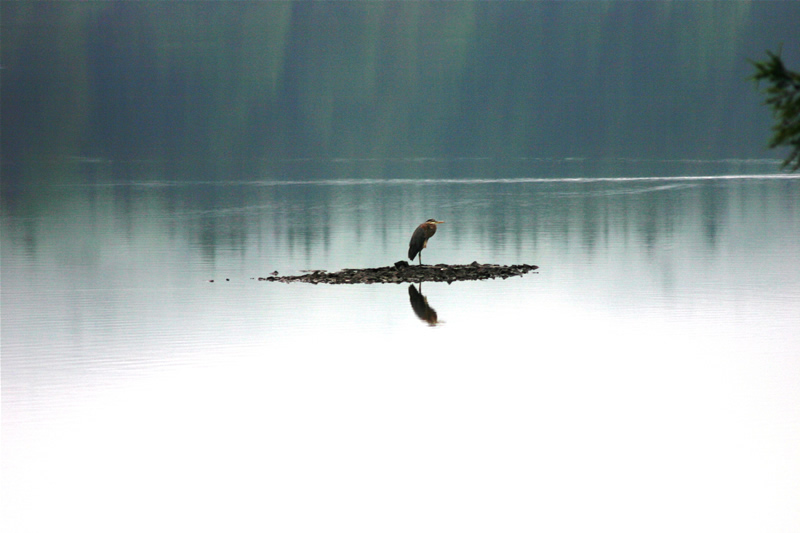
Uploaded by request of Melissa Bengtson

Taken in Hartford, CT

This photo was taken last year by one of the Metropolitan District Clean Water Project patrol officers. This photo represents a peaceful living experience for our wildlife animals that visit MDC property.